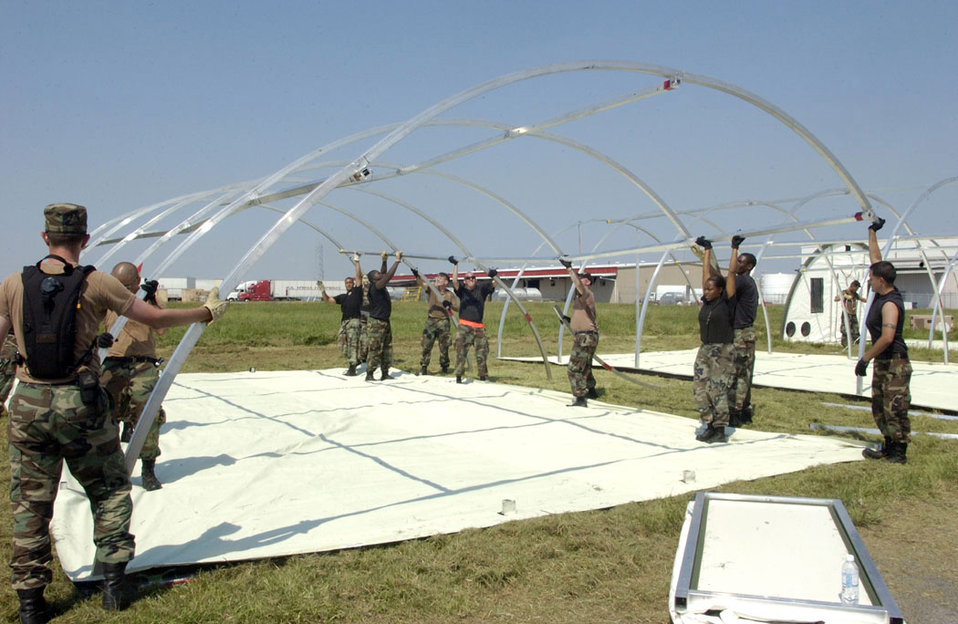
Tent city

NEW ORLEANS -- Airman erect tents at Louis Armstrong International Airport here Sept. 4. The tents were flown in from the 49th Materiel Maintenance Group at Holloman Air Force Base, N.M., to house workers supporting the Hurricane Katrina relief effort.